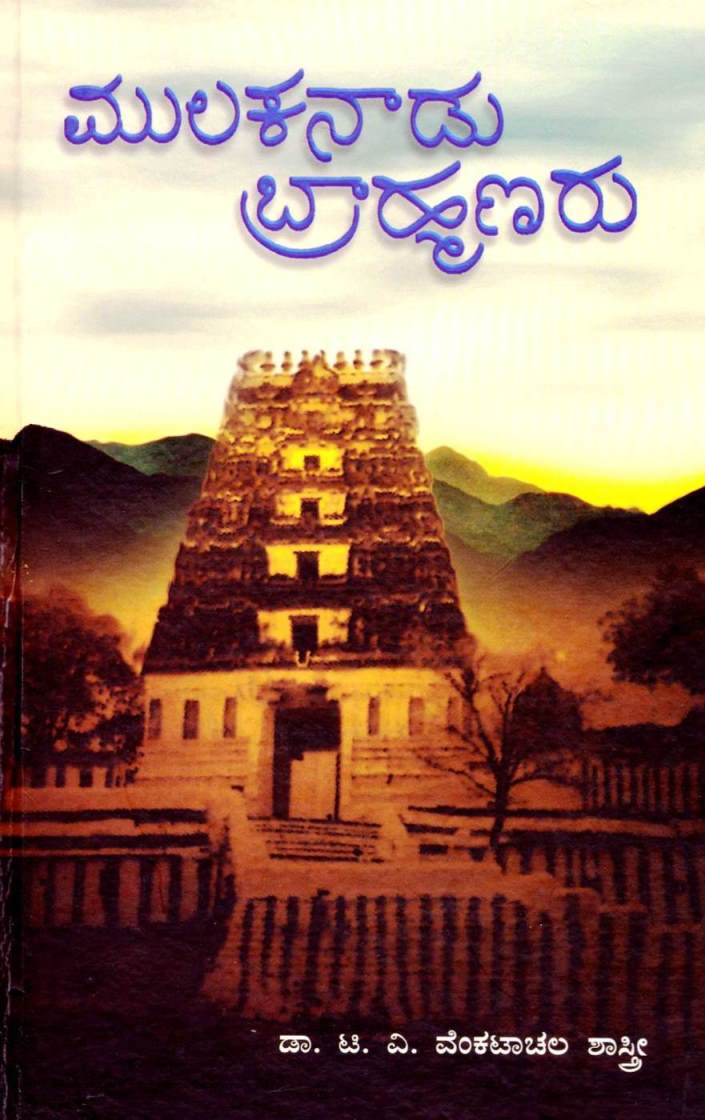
'Mulukanadu Brahmanaru' by T. V. Venkatachala Sastry - A Study in Genealogy and Sociology of South Indian Brahminical Mulukanadu Sect, their origins and present day occupations.